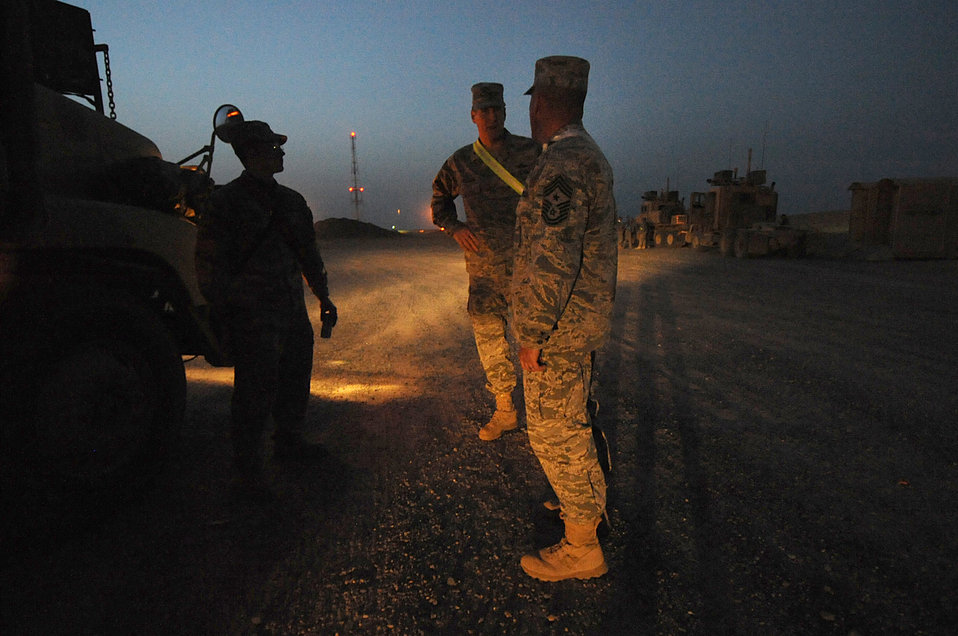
Convoy in Southwest Asia

Airmen are greeted by squadron, group and wing leaders upon their return from a convoy mission May 4, 2011, in Southwest Asia.